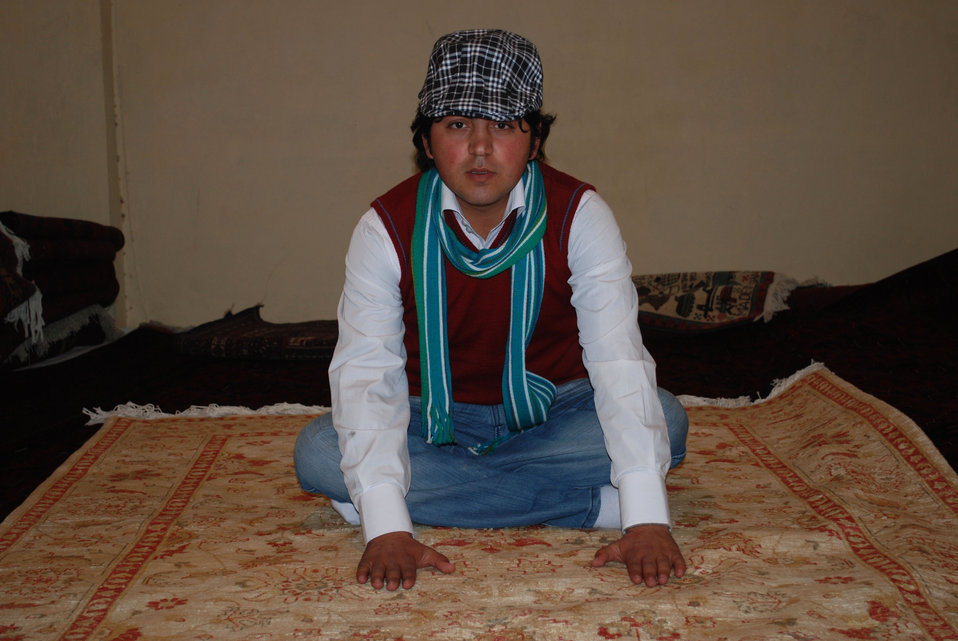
'On the Road' in Nangarhar Province